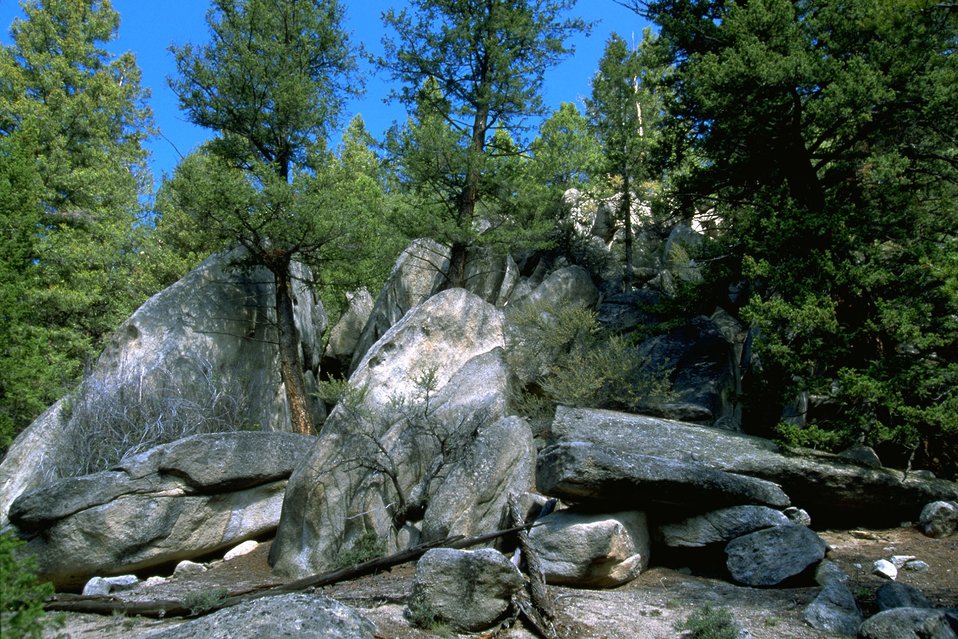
Tree surrounded by large rock formations